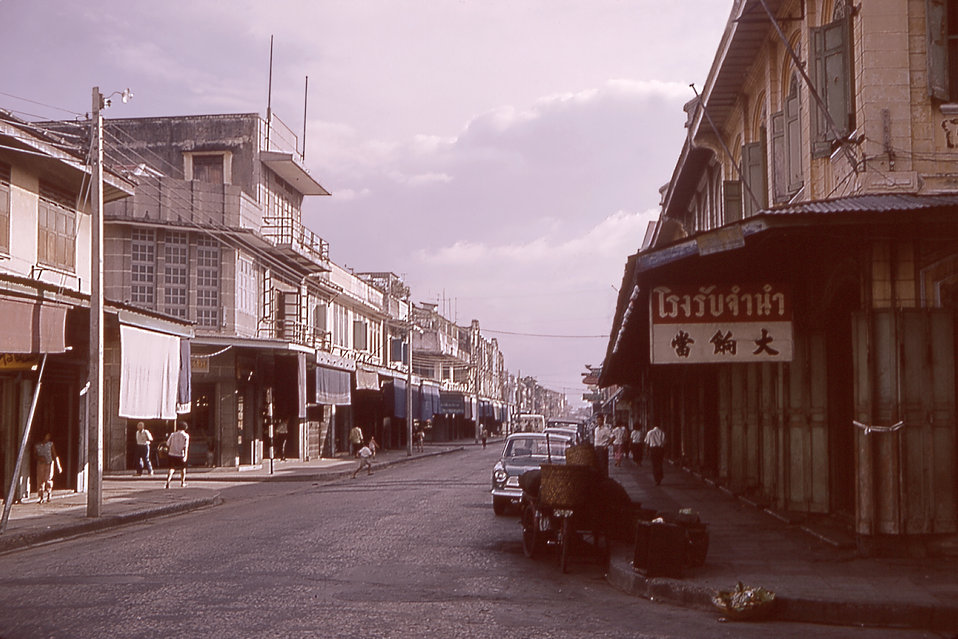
This is a 1964 photograph depicting store fronts in the Old City section of Bangkok, Thailand.